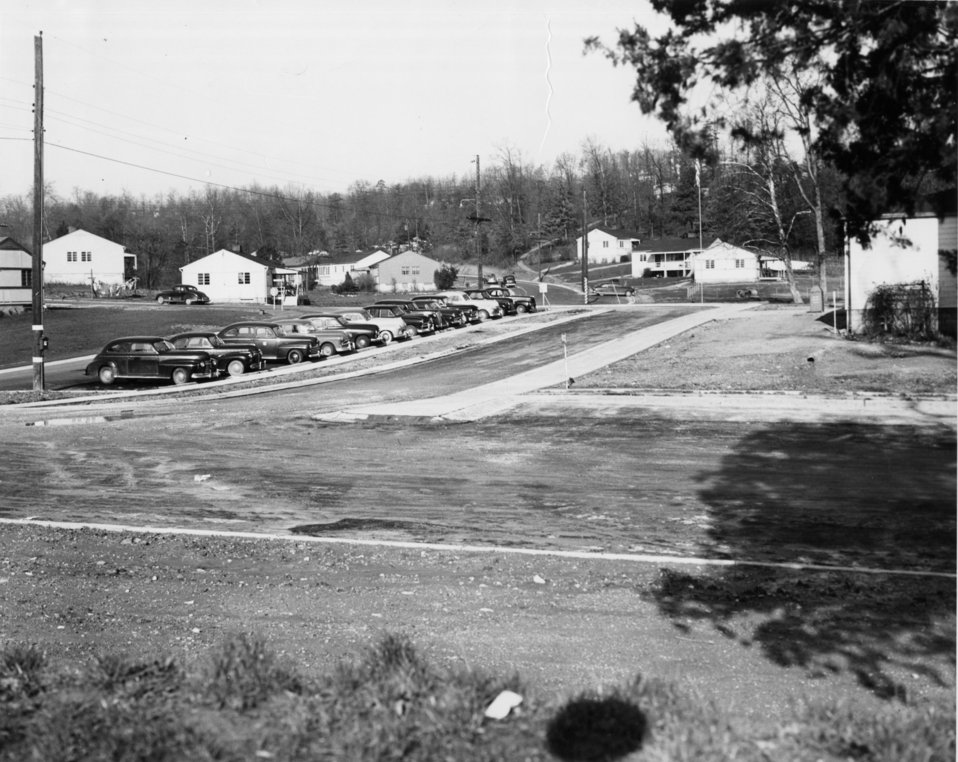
Schools at Oak Ridge